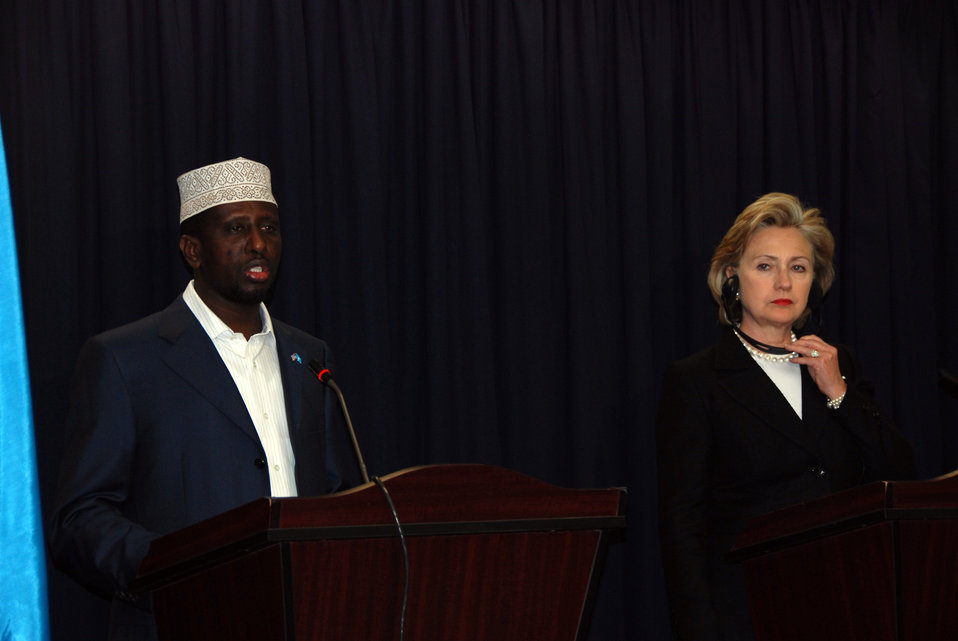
Secretary Clinton and Somali President Press Conference

U.S. Secretary of State Hillary Rodham Clinton participates in a press conference with the Somali President Sheikh Sharif Ahmed in Nairobi, Kenya August 6, 2009.